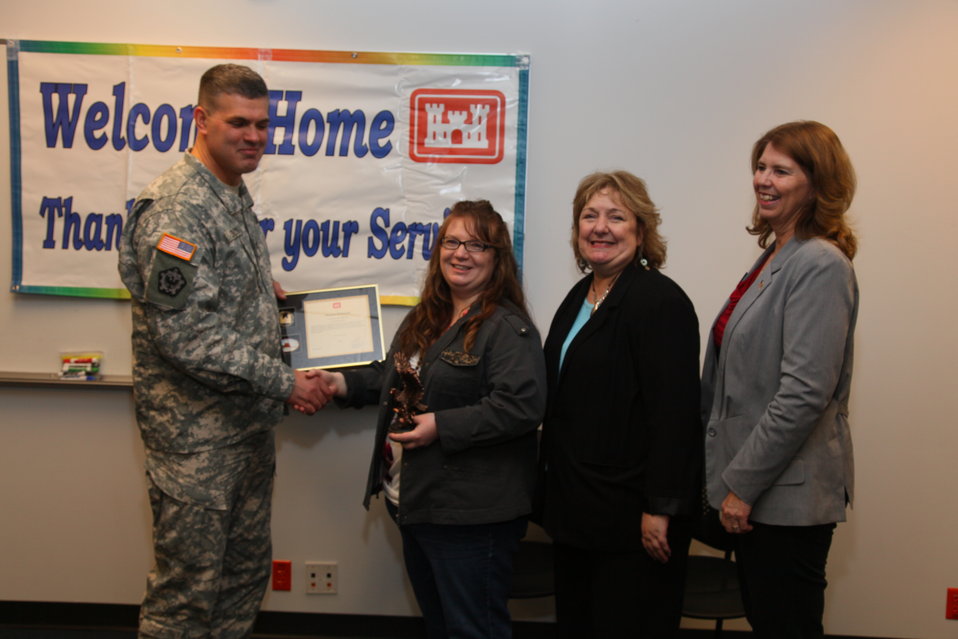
Sacramento District welcomes home Afghanistan volunteers

Sacramento District safety office chief, Marjorie McDonald, receives an award from district commander, Col. Bill Leady, for her service in Afghanistan at a welcome-home ceremony in Sacramento, Calif., Jan. 13, 2012. Five district employees were honored for recent Overseas Contingency Operations service at the event. In 2011 alone, the district saw 27 employees volunteer for service in Overseas Contingency Operations.